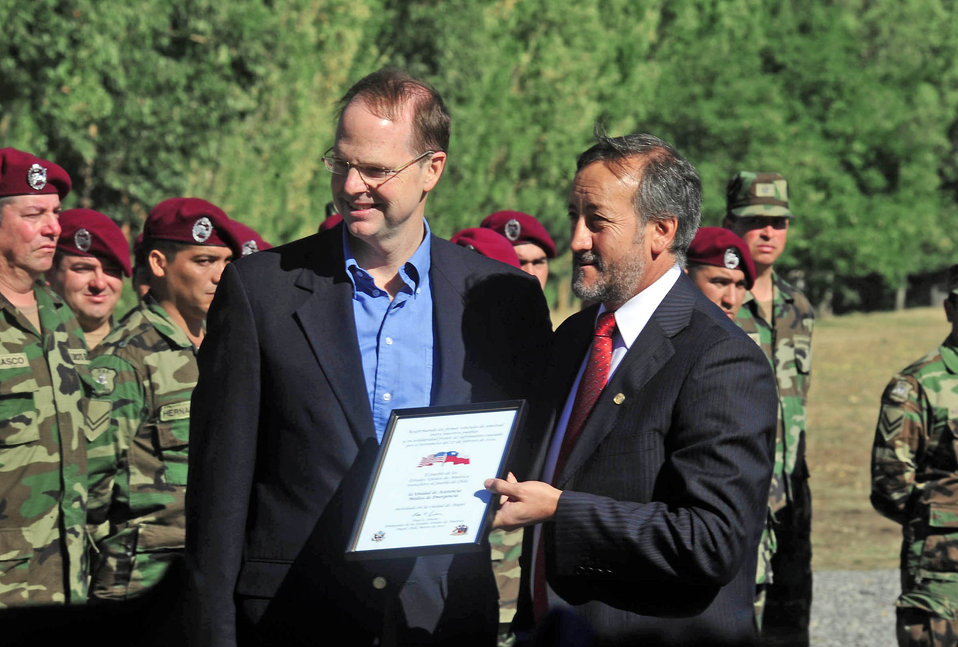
Hospital donation

Paul Simons, the U.S. ambassador to Chile, presents a certificate to Enrique Neira, the mayor of Angol, Chile, during a ceremony March 24, 2010, to recognize the donation of the expeditionary hospital to the citizens of Angol. Prior to the building of this hospital, medical professionals in Angol used a 16-bed clinic to treat patients in the community. With the addition of this hospital, health professionals in Angol will have back about 60 percent of the beds lost as a result of the 8.8 magnitude earthquake that struck Chile Feb. 27.